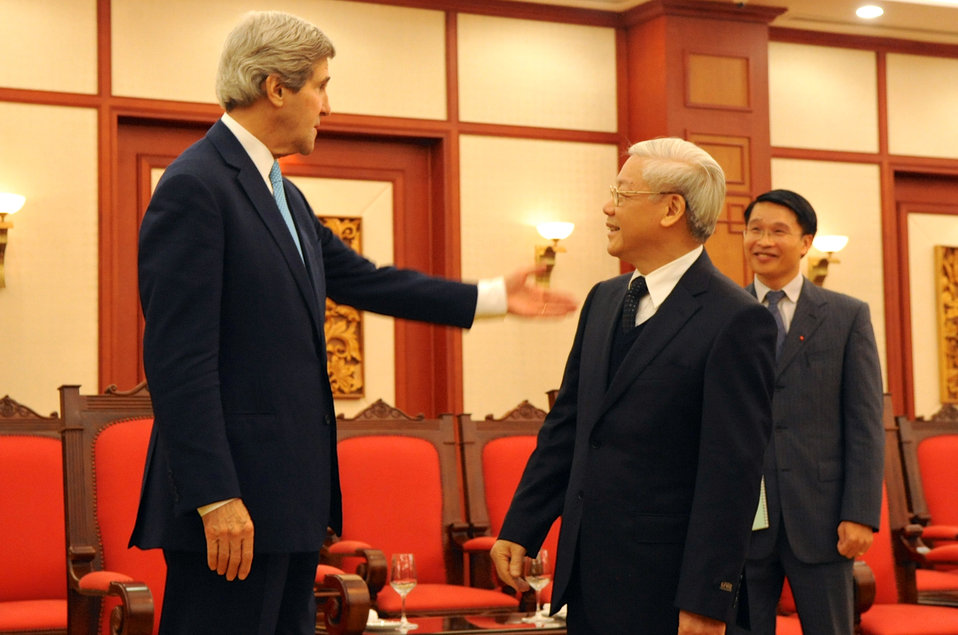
Vietnamese Communist Party Secretary General Trong Receives Secretary Kerry

Vietnamese Communist Party General Secretary Nguyen Phu Trong receives U.S. Secretary of State John Kerry before a meeting in Hanoi, Vietnam, on December 16, 2013.